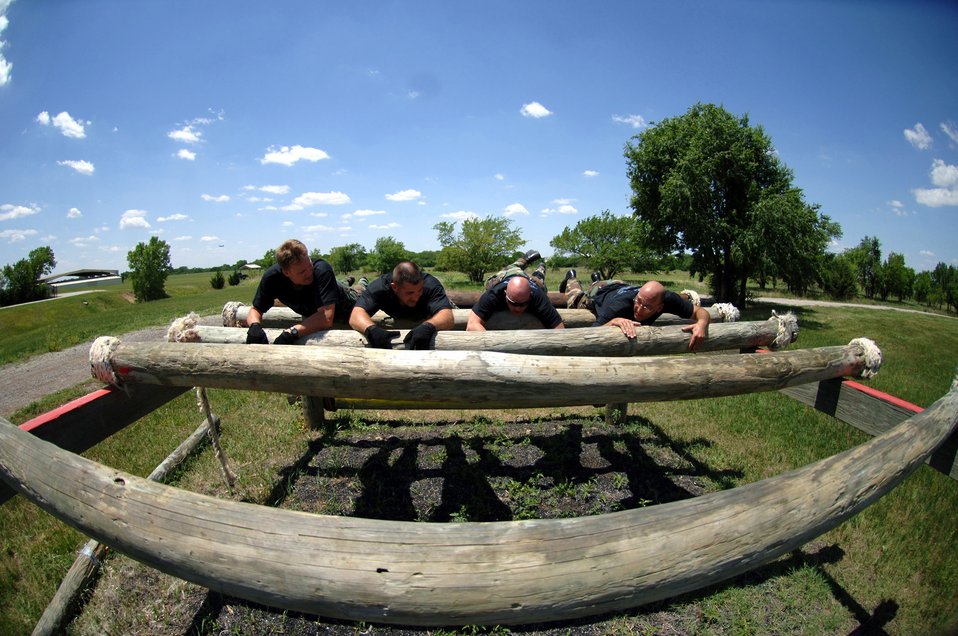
Belly buster

Chief Master Sgt. Todd Salzman, 22nd Air Refueling Wing command chief; Tech. Sgts. Michael Castillo and Randy Boyd, 22nd Logistics Readiness Squadron; and Chief Master Sgt. Mitchell Stippel, 22nd Mission Support Group, tackle the